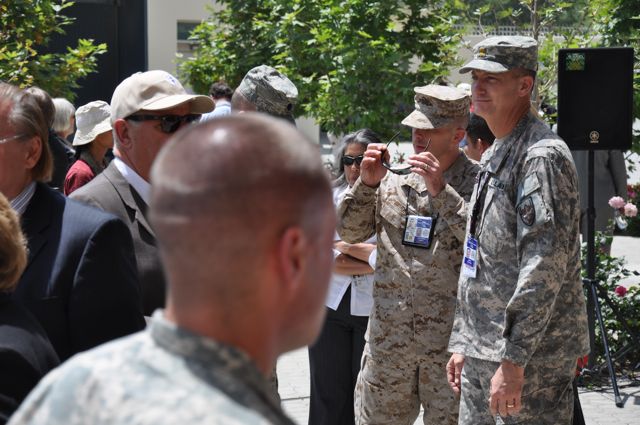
Memorial Day at US Embassy in Kabul